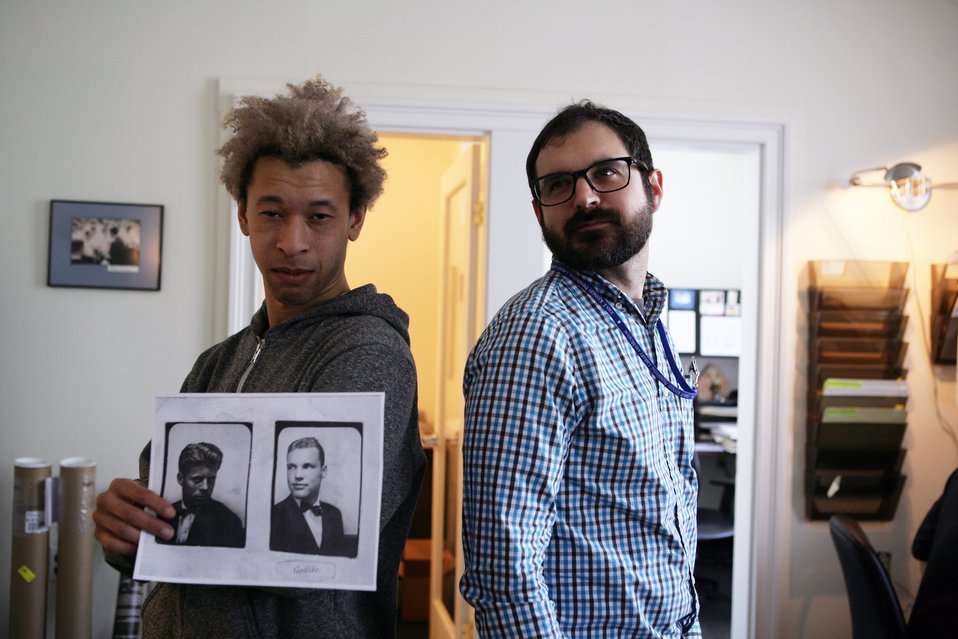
Audiovisual Archives interns Mike Pallazola and Chris Walker do their best John F. Kennedy and Lem Billings impersonations at the Kennedy Library.; Location: John F. Kennedy Presidential Library, Boston, MA